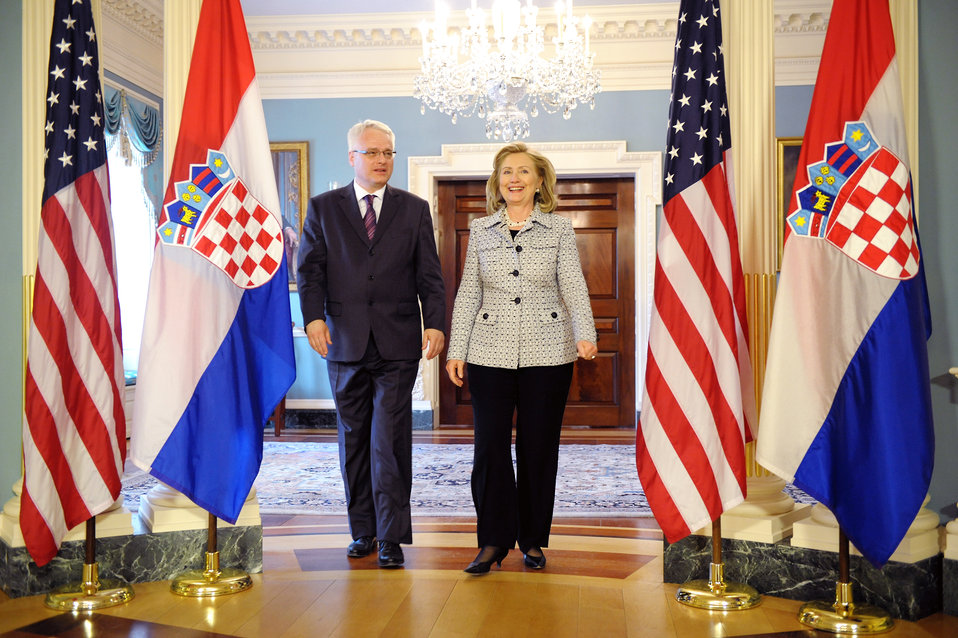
Secretary Clinton and Croatian President Josipovic Enter the Room

U.S. Secretary of State Hillary Rodham Clinton and Croatian President Ivo Josipovic enter the room to deliver remarks in a joint press conference after their bilateral meeting, at the U.S. Department of State in Washington, D.C., on May 3, 2011.